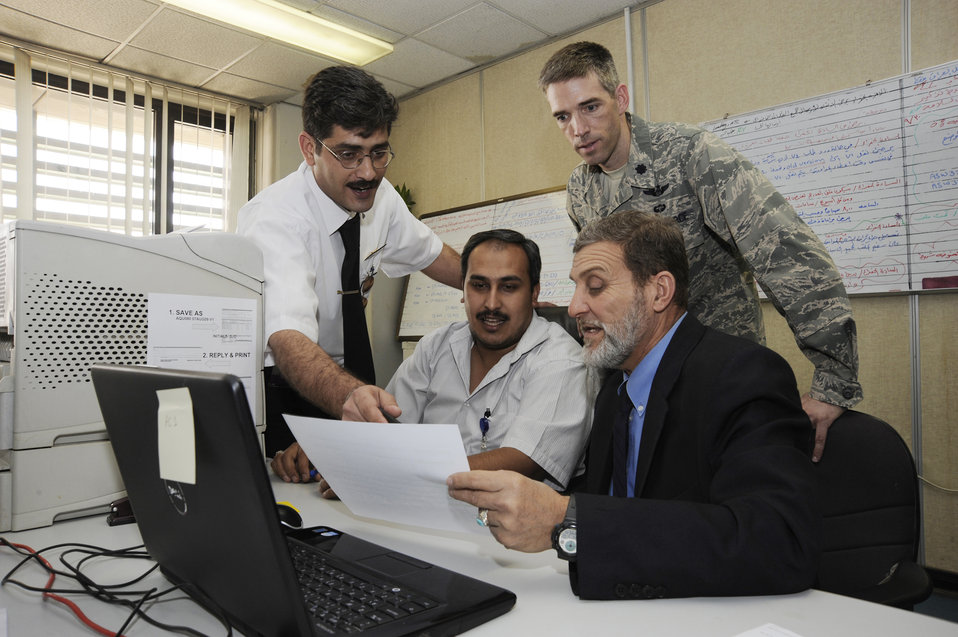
Airmen help Iraqis touch the sky

Lt. Col. Dan Oosterhous observes while members of the Iraqi civil aviation authority demonstrate their ability to properly approve and disapprove civil aircraft flights throughout Iraq Aug. 20 in Baghdad. Colonel Oosterhous is the Regional Air Movement Control Center chief assigned to the Combined Air Operations Center in Southwest Asia, and is deployed from Scott Air Force Base, Ill. He is a native of Texarkana, Ark.